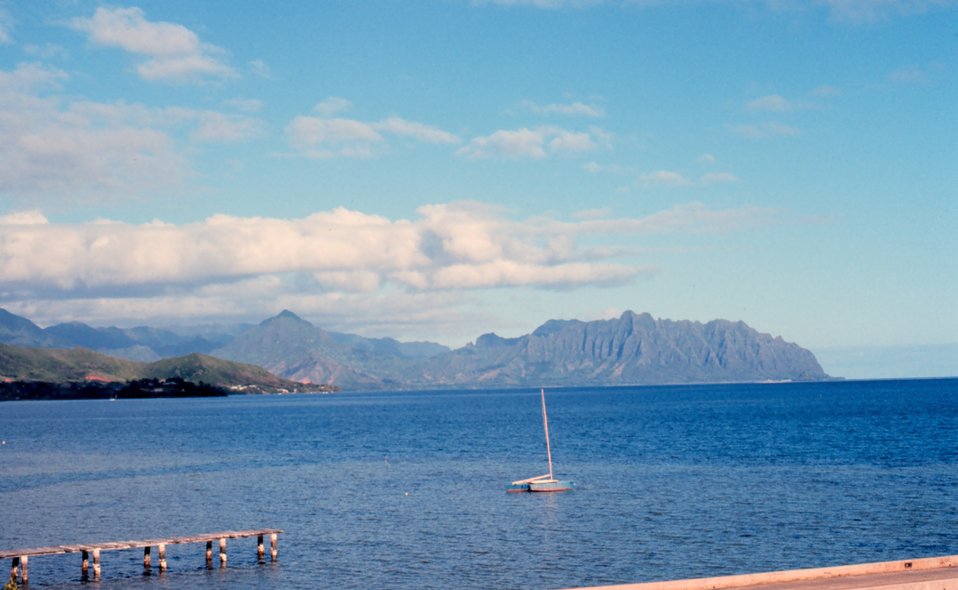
Kaneohe bay area